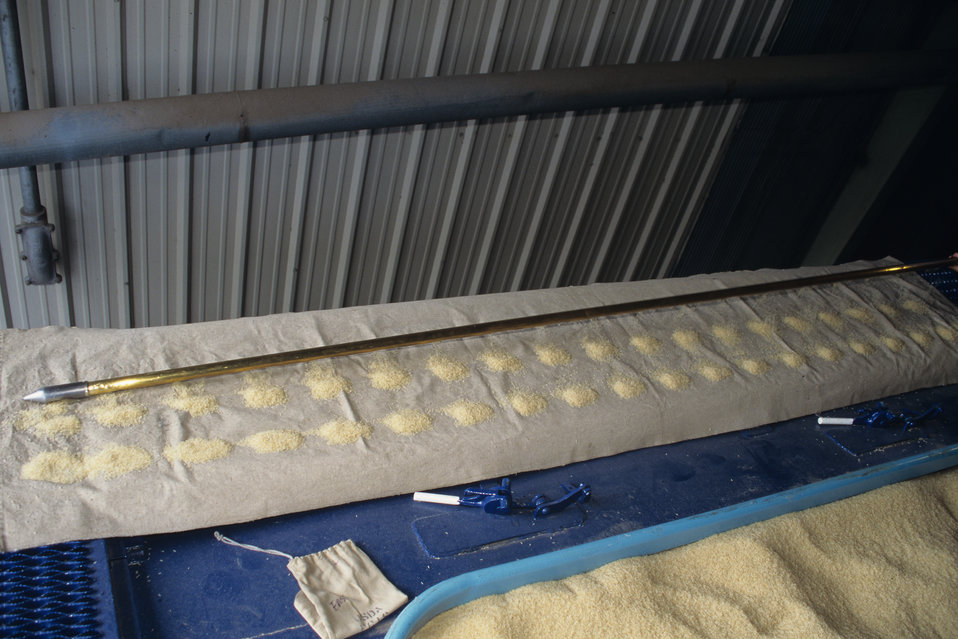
Rice probe samples from a rail hopper car are set aside for testing at Riceland Foods Incorporated in Jonesboro, AR on Sept. 1, 1996. The U.S. Department of Agriculture (USDA) Grain Inspection, Packers and Stockyards Administration (GIPSA) offers inspection services for rice upon request on a fee basis for both domestic and export shipments. Rice inspection services are divided into two basic types: inspection for grade or factor analysis without grade. Inspection for grade involves analyzing the sample according to the quality factors listed in the Official U.S. Standards for Rice and certifying the applicable numeric grade designation, the quality factors responsible for the grade assignment, and any other quality factors the customer requests. Factor analysis involves the analysis of quality factors requested by the applicant for service without the certification of an applicable numeric grade designation. Factors requested by applicants might include free fatty acid, total oil and free fatty acid, stain as a count, broken in brown rice, false smut, and aflatoxin. Official inspections result in the issuance of an official certificate, which reports the grade of the rice. U.S. and international buyers rely on official USDA inspection certificates to provide accurate, official descriptions of the grade, class, and condition of the inspected rice. Official certificates are receivable by all offices and all courts of the United States as prima facie evidence of the truth of the statements stated thereon.